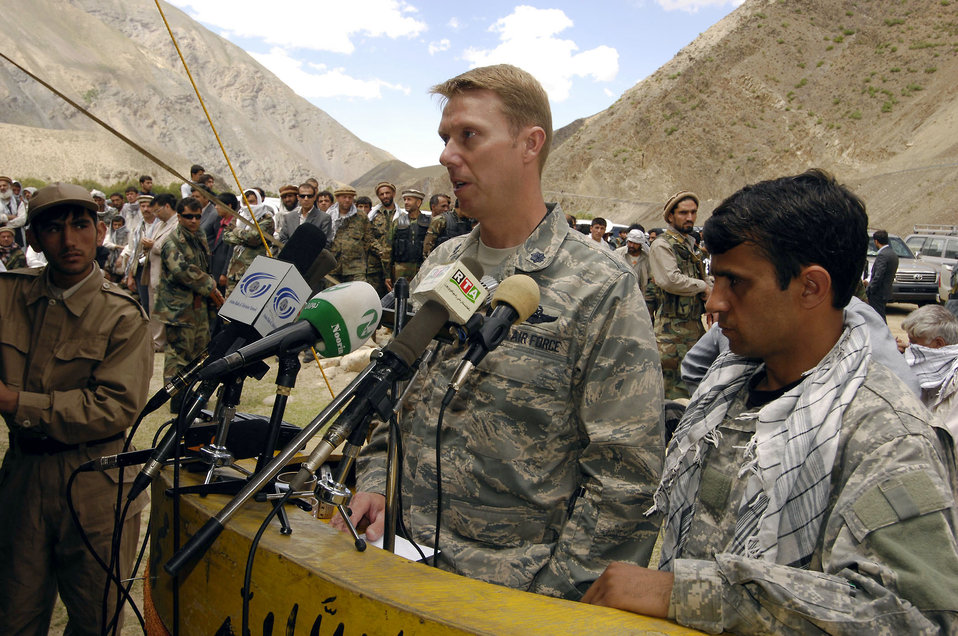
New road brings prosperity to Afghan province

Lt. Col. Russell Kaskel speaks to a crowd of more than 1,000 at the groundbreaking ceremony for the $6 million Barak to Khenj road in May 28 in Barak of the Bazarak District of the Panjshir province in Afghanistan. The 18-kilometer, two-lane road is scheduled to be completed in March 2009. Colonel Kaskel is the Panjshir Provincial Reconstruction Team commander.